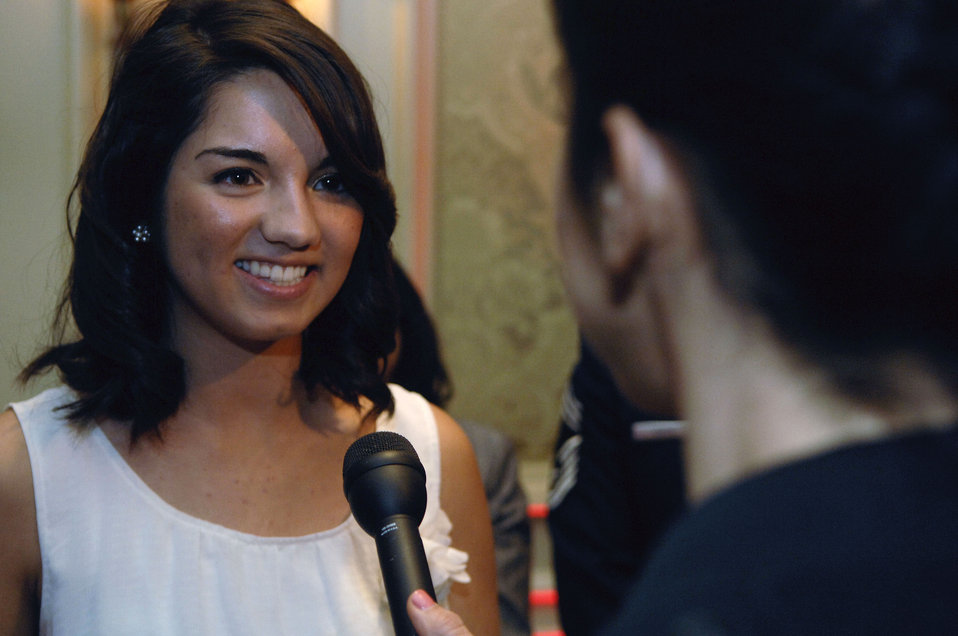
Nicole Goetz, of Tyndall Air Force Base, Fla., responds to interview
questions during Operation Homefront's 2011 Military Child of the Year award ceremony April 7, 2011, in Arlington, Va. Ms. Goetz is the Air Force's
award recipient. She is the daughter of Chief Master Sgt. Michael Goetz, who traveled here from Afghanistan to see his daughter get her award in person. Ms. Goetz volunteered at the local youth center, her church, veterans and nursing homes, and joined a variety of high school clubs. She also organized 21 local schools to create and send hundreds of homemade
Christmas cards, cookies and care packages to troops overseas. A committee of active-duty service members, family readiness support assistants, teachers, military mothers and community members chose the award recipients. The winners received $5,000 and a trip to Washington for the ceremony.